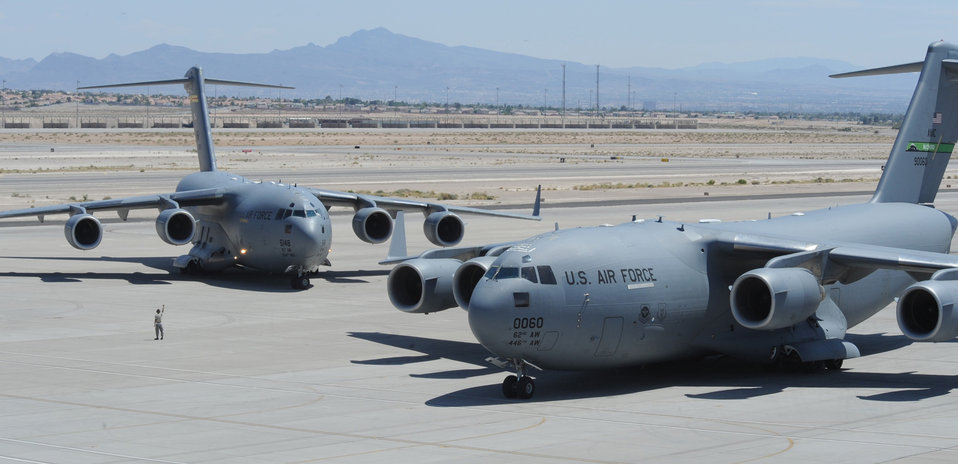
Airpower summary

C-17 Globemaster IIIs, like the ones shown here at Nellis Air Force Base, Nev., provide intra-theater heavy airlift, helping to sustain operations throughout Afghanistan, Iraq and the Horn of Africa.